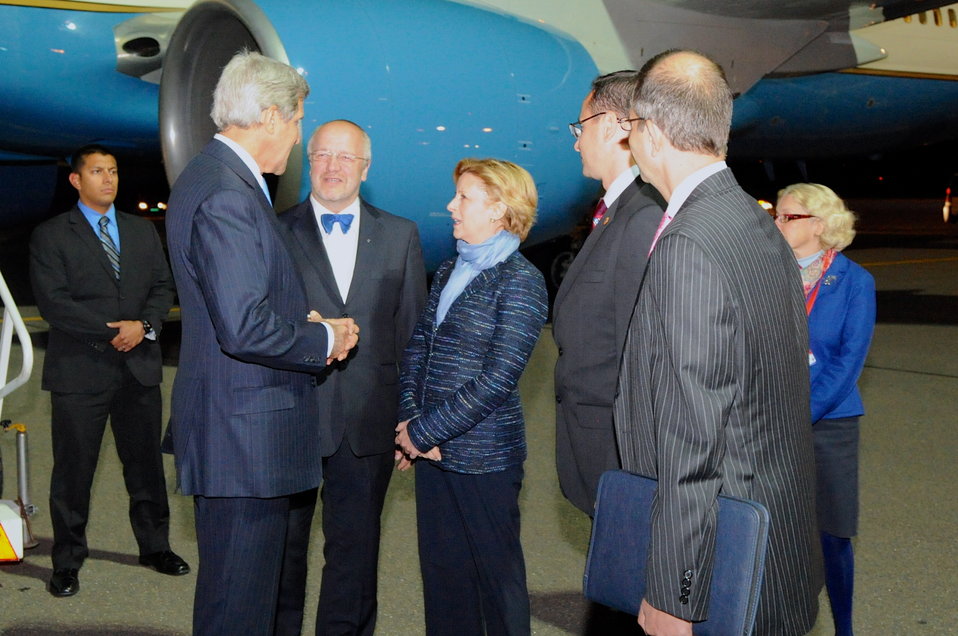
Secretary Kerry Arrives in Vilnius, Lithuania

U.S. Secretary of State John Kerry speaks with U.S. Ambassador to Lithuania Deborah A. McCarthy following the Secretary's arrival in Vilnius, Lithuania for an EU Foreign Ministers meeting on September 6, 2013.